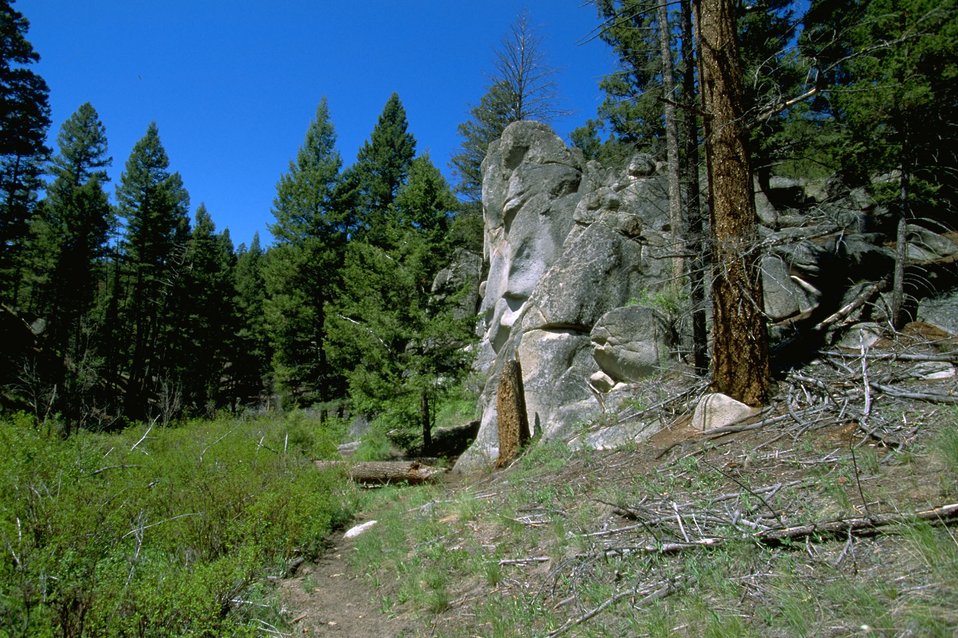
Rock formations, grass and trees